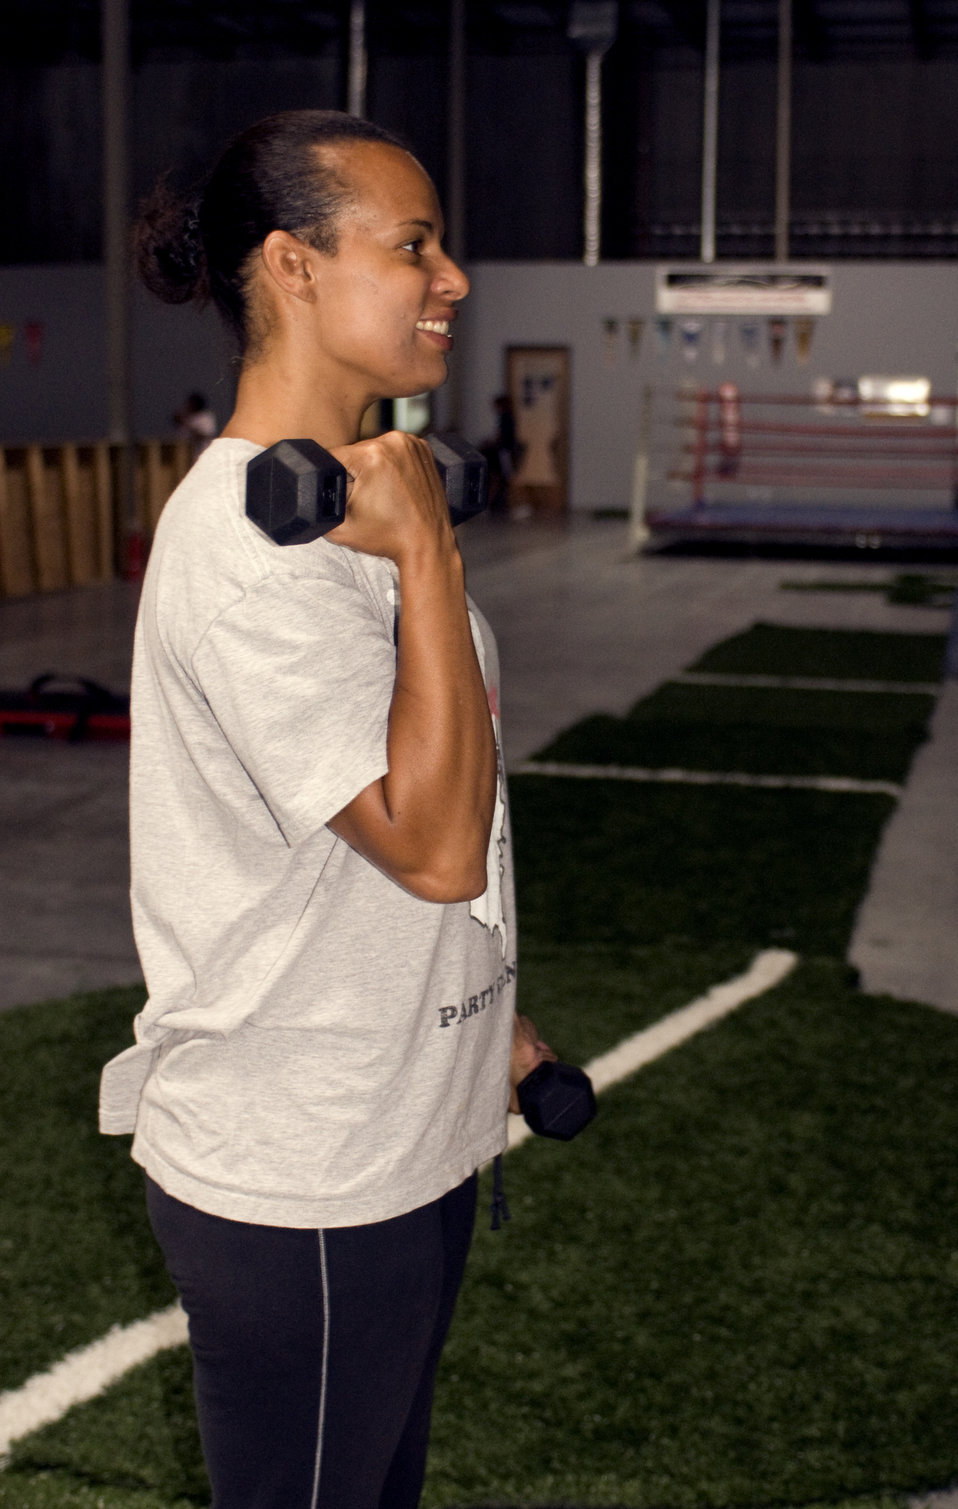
Photographed in an indoor gymnasium, this young woman was warming up prior to her vigorous exercise routine. Here she was, holding a light-weight dumbbell in each hand, and performing a curling motion, or flexing her arms at the elbows, lifting the small weights up to her shoulders.